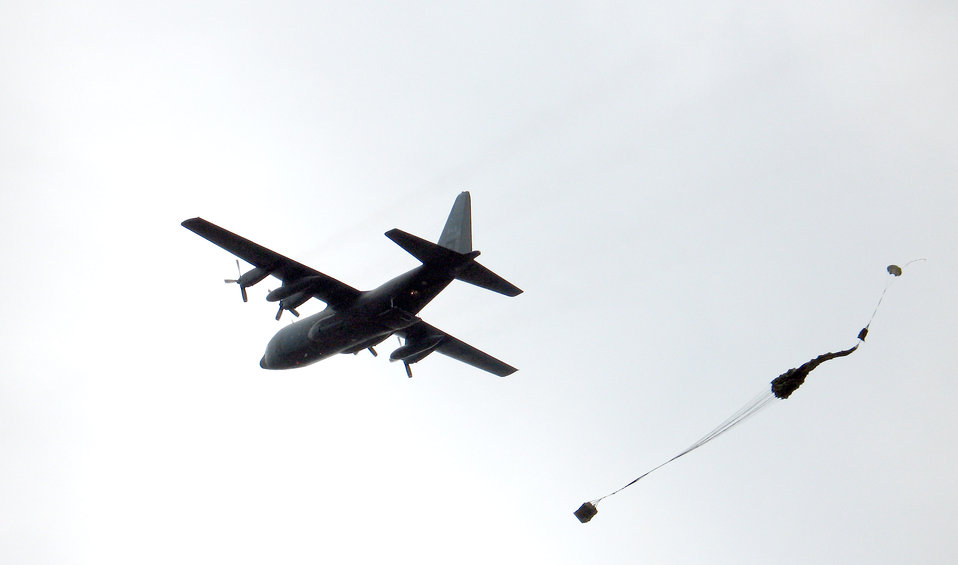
Ramstein C-130s participate in NATO airdrop demonstration

A C-130 Hercules conducts a precision air drop for a NATO-sponsored Precision Airdrop Capabilities demonstration at the Centre d'Essais Lancement de Missiles at Biscarrosee and at Cazaux Air Base, France. The C-130 and its crew were from Ramstein AB, Germany.